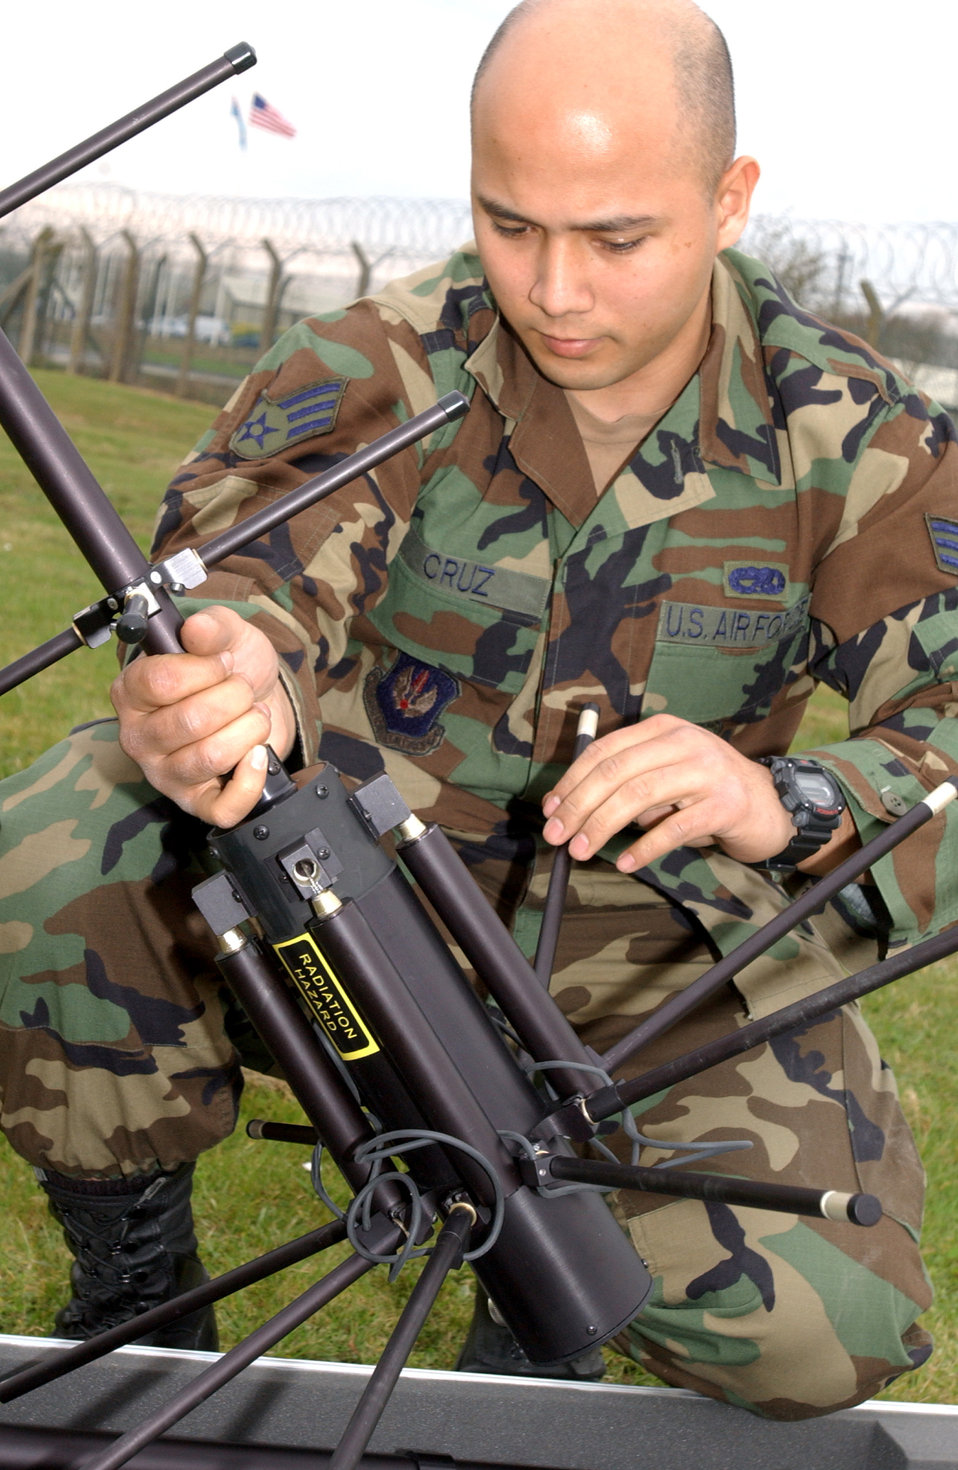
Setting up communications

ROYAL AIR FORCE FAIRFORD, England -- Senior Airman Charles Cruz assembles a PSC-5 tactical satellite radio here recently. The PSC-5 supports the Department of Defense requirement for a lightweight, secure, network-capable, multi-band, multi-mission, anti-jam, voice, imagery and data communications capability in a single package. Airman Cruz is assigned to the 100th Communications Squadron at Royal Air Force Mildenhall.